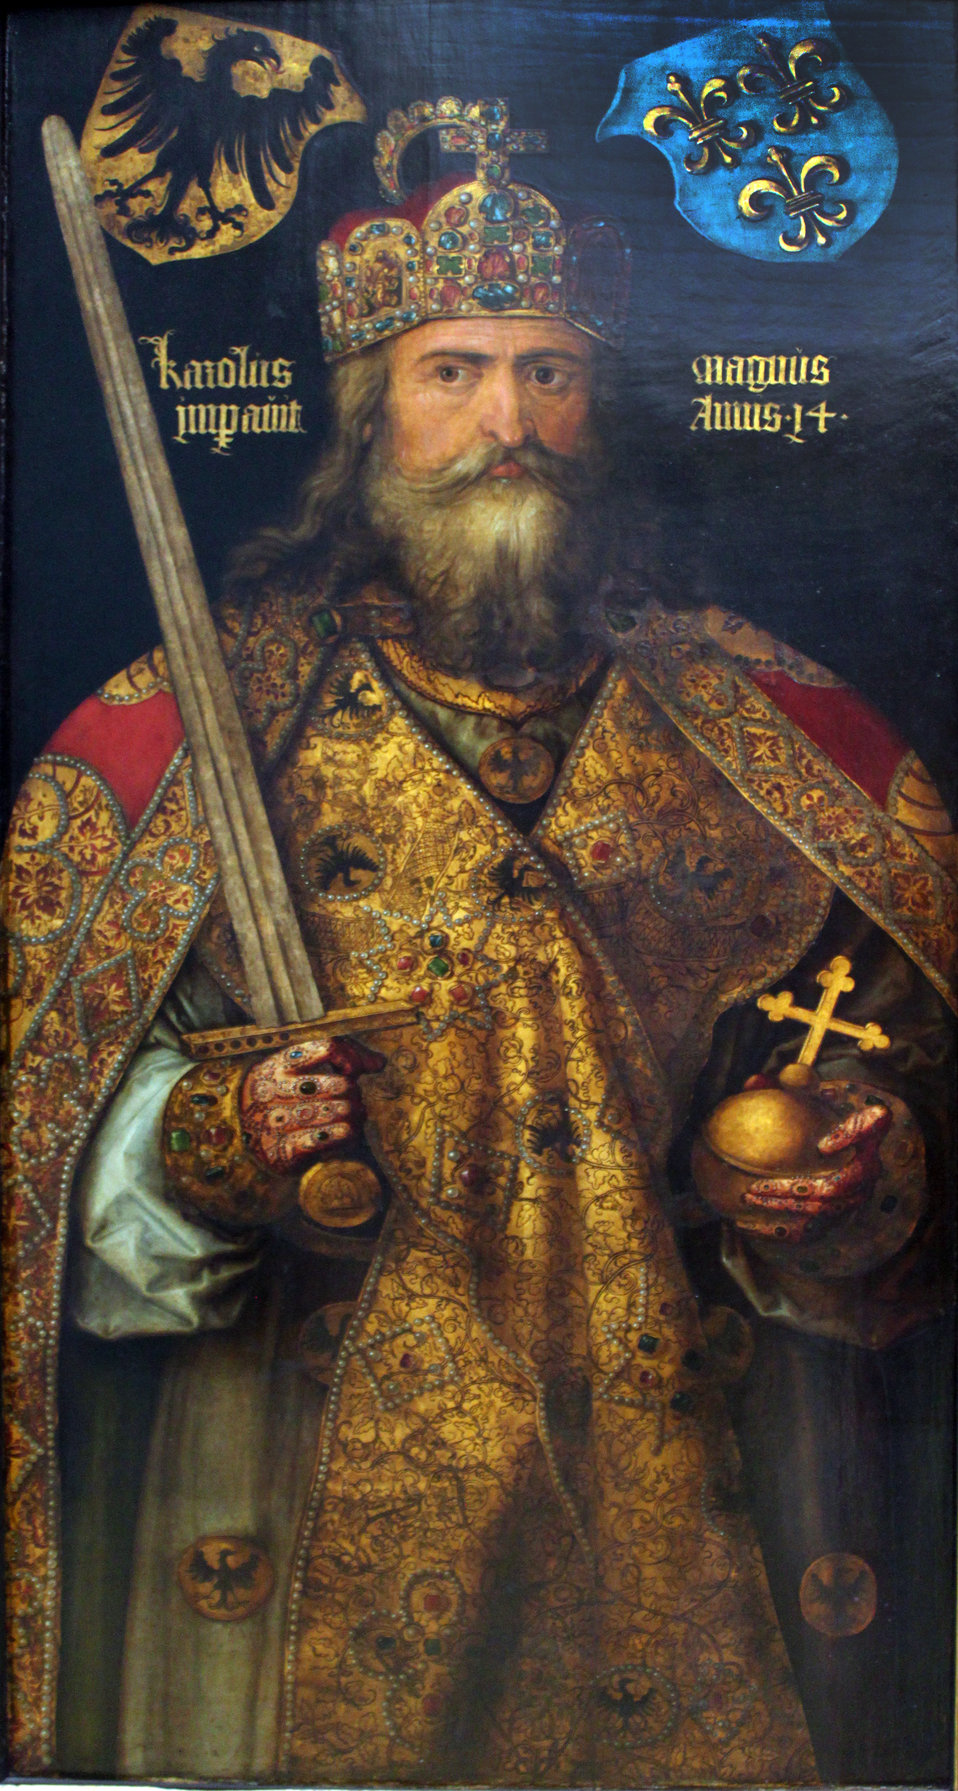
1512 Dürer Kaiser Karl der Große anagoria